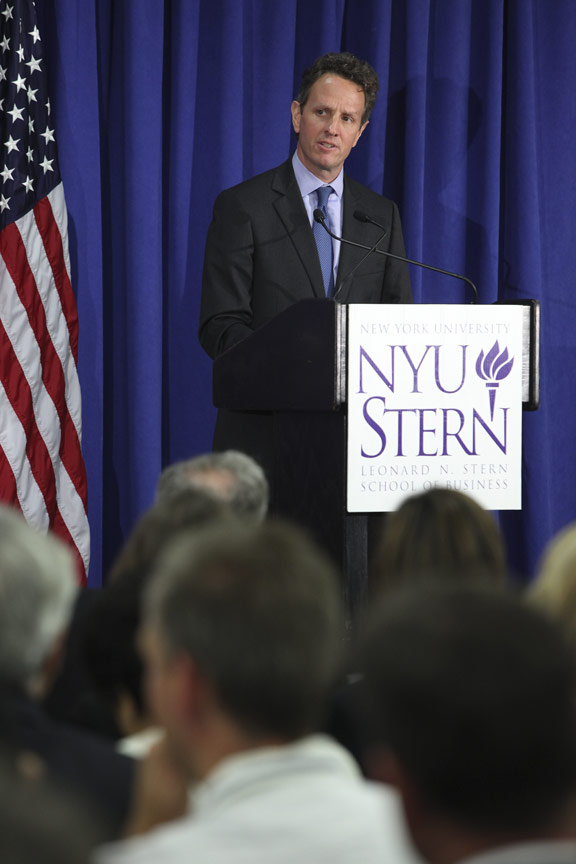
Secretary Geithner Delivers Remarks on Financial Reform at NYU, 8/2/2010

On Monday, August 2, 2010, Secretary Geithner delivered remarks at New York University's Stern School of Business in which he discussed the path forward for financial reform. He stressed that we now have an opportunity to build on the legislation passed by Congress last month and unleash a new era of economic growth. Secretary Geithner discussed how Wall Street, Main Street, and Washington have a shared interest and obligation to get the next stage of reform right.